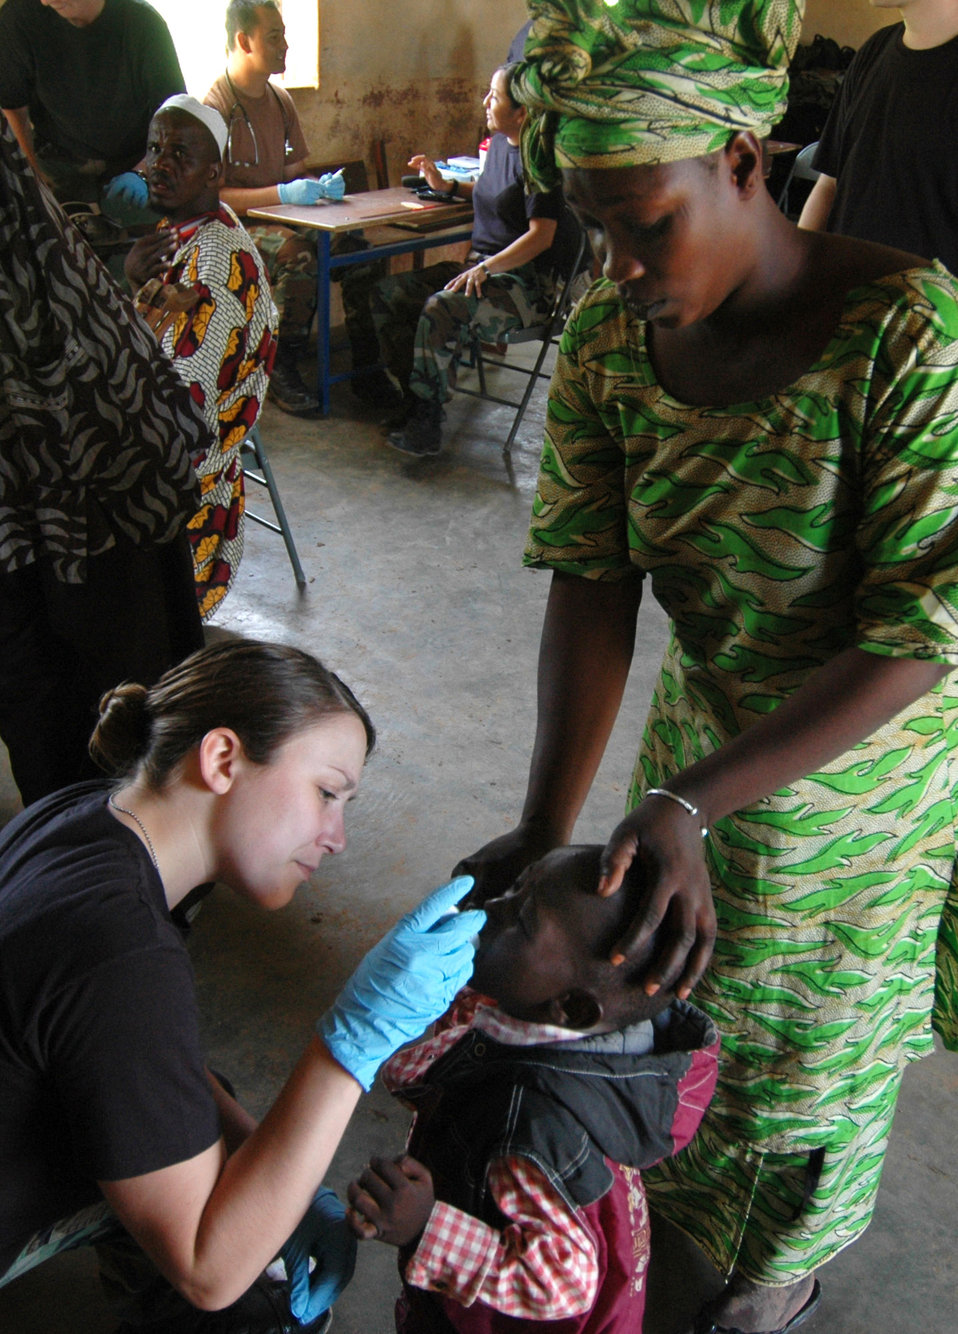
Servicemembers treat 8,100 patients, livestock in Mali

Senior Airman Alicia Mangan takes the temperature of a little boy July 24 in a village outside of Bamako, Mali. American servicemembers traveled to four villages during a series of humanitarian outreach visits. Airman Mangan is deployed from Royal Air Force Lakenheath, England.